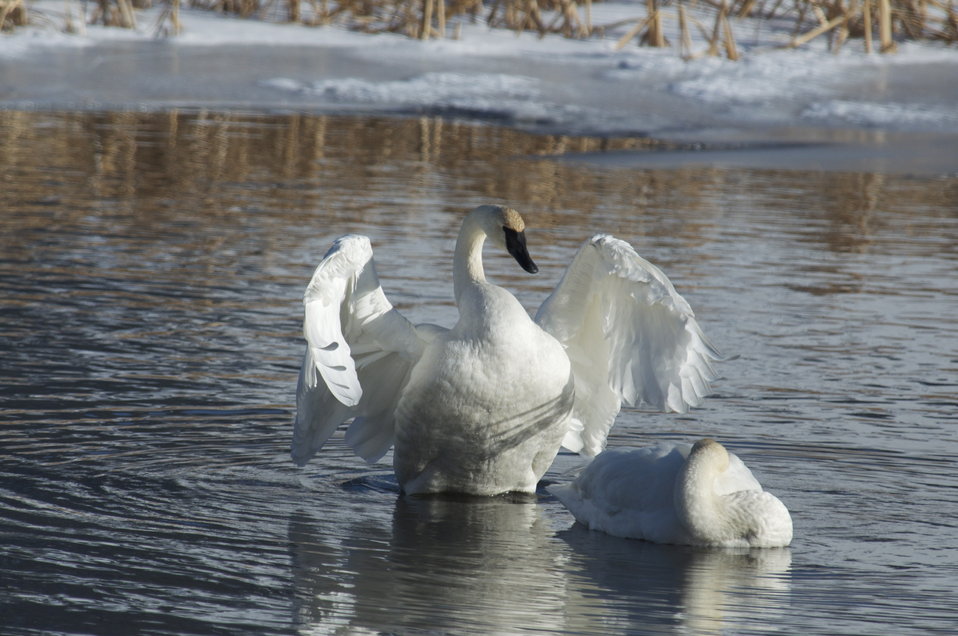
Swans on Flat Creek

One trumpeter swan stretches its wings while another rests in Flat Creek.

Credit: USFWS / Mike Nordell, NER winter naturalist